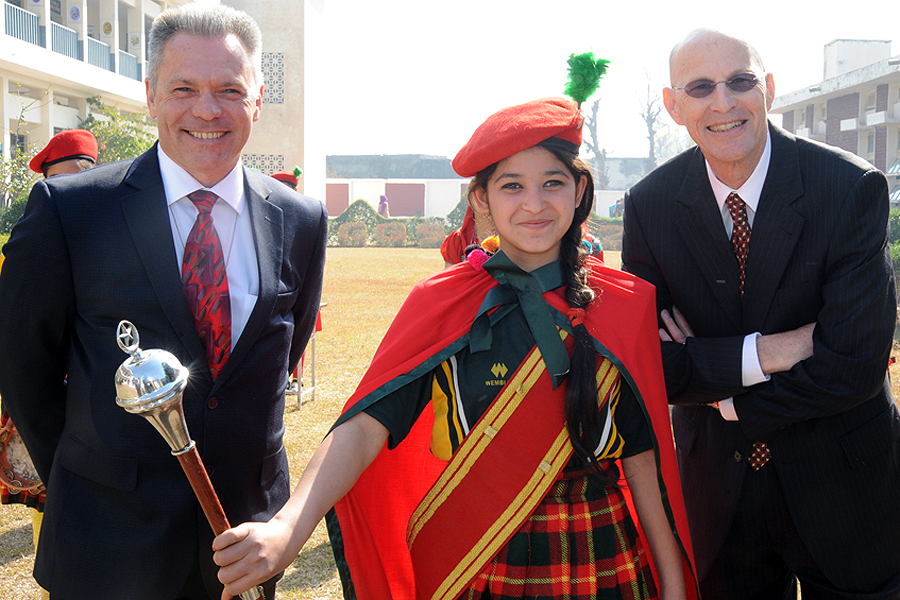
United States and Pakistan Launch the Pakistan Reading Project